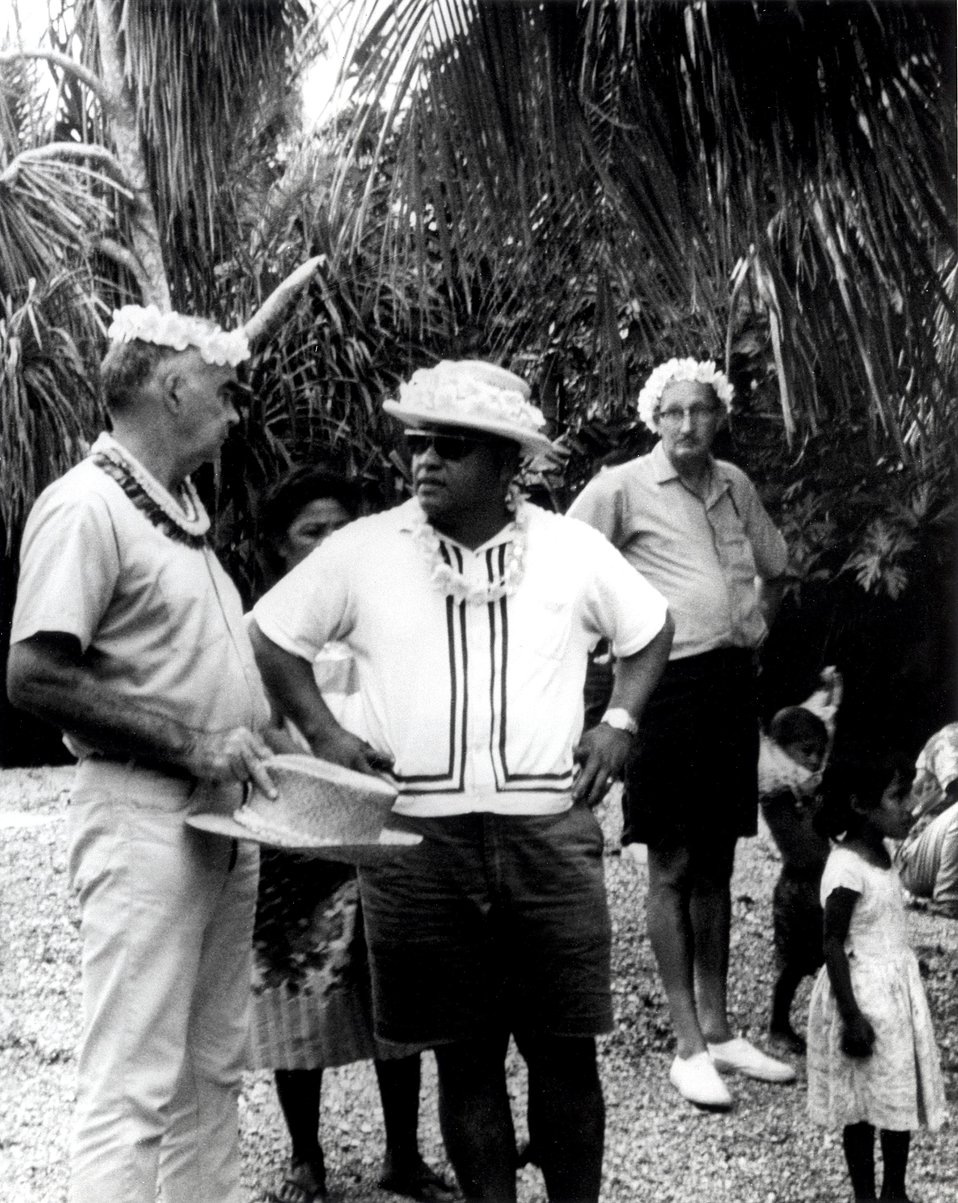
Bikini Islands, ten years after nuclear testing inhabitants allowed to return.